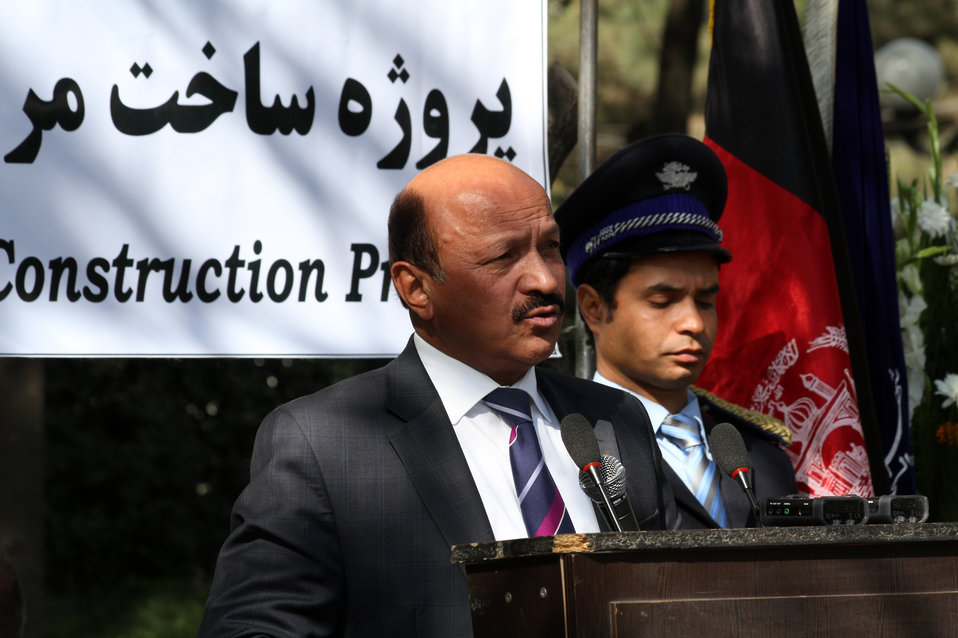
Dr.Younes Nawandish Kabul Mayor